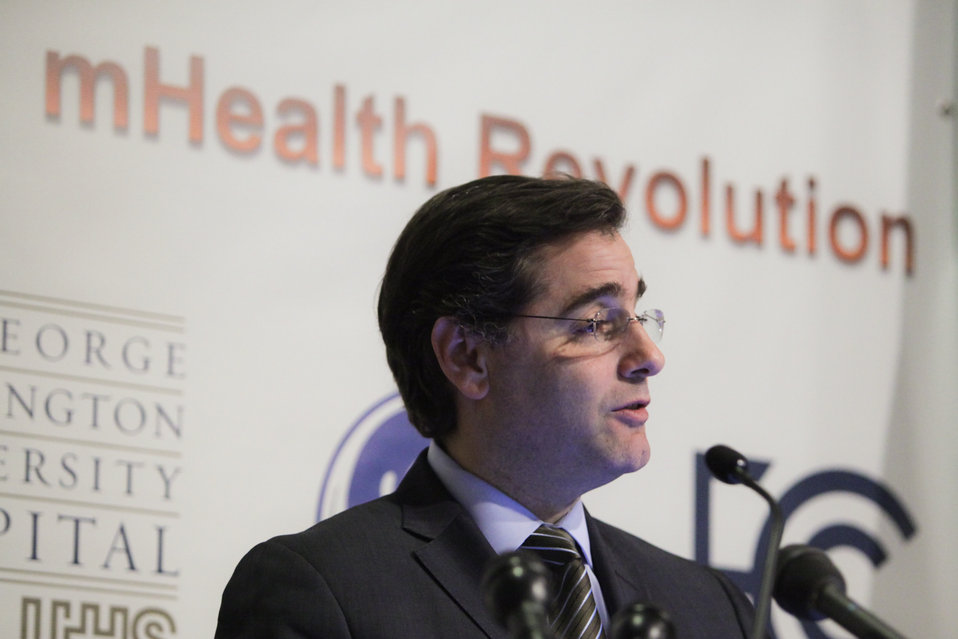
FCC Chairman Genachowski Speaks at GW University Hospital About MBANs to Medical Industry

FCC Chairman Genachowski speak about MBANs to Medical Industry at George Washington University Hospital in Washington, DC.

May 17, 2012.